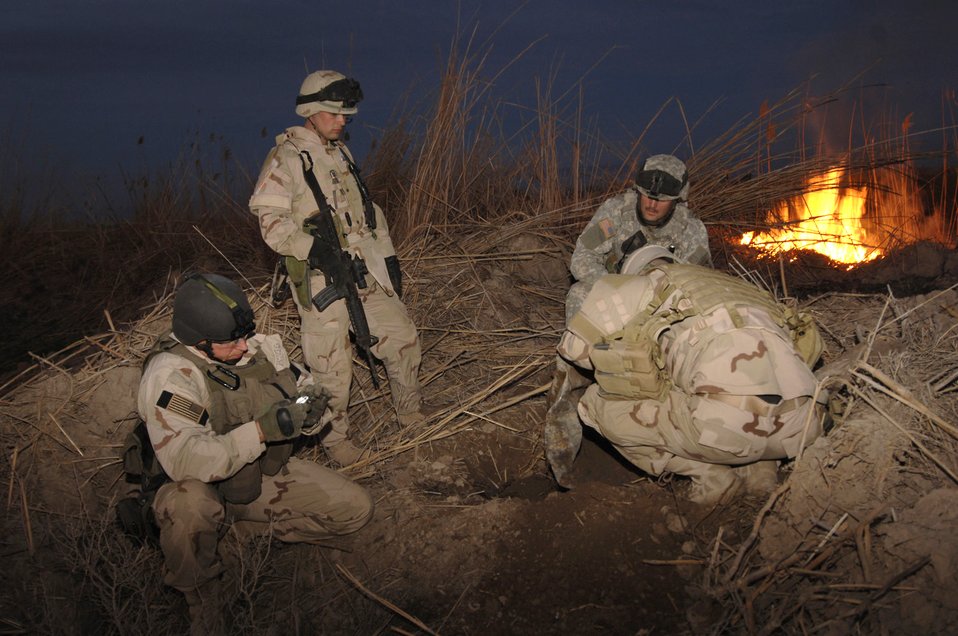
Weapons cache discovery

Airmen with the 447th Civil Engineer Squadron's explosive ordnance disposal team explore a munitions bunker in Baghdad, Iraq, Monday, Feb. 20, 2006. The bunker was discovered after a previous detonation scorched the earth, revealing the entrance to a larger weapons cache.